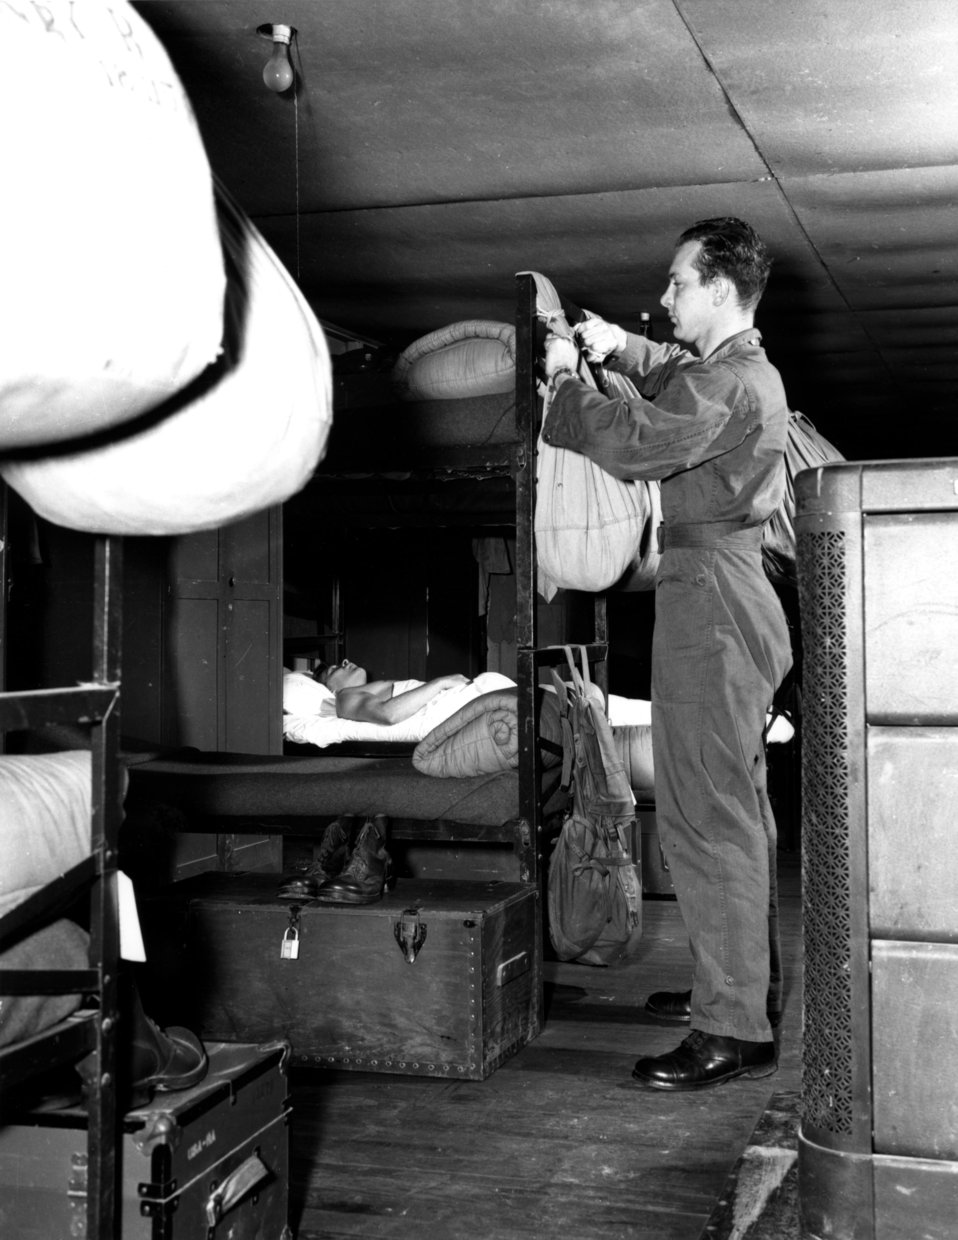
Army Activity at Oak Ridge